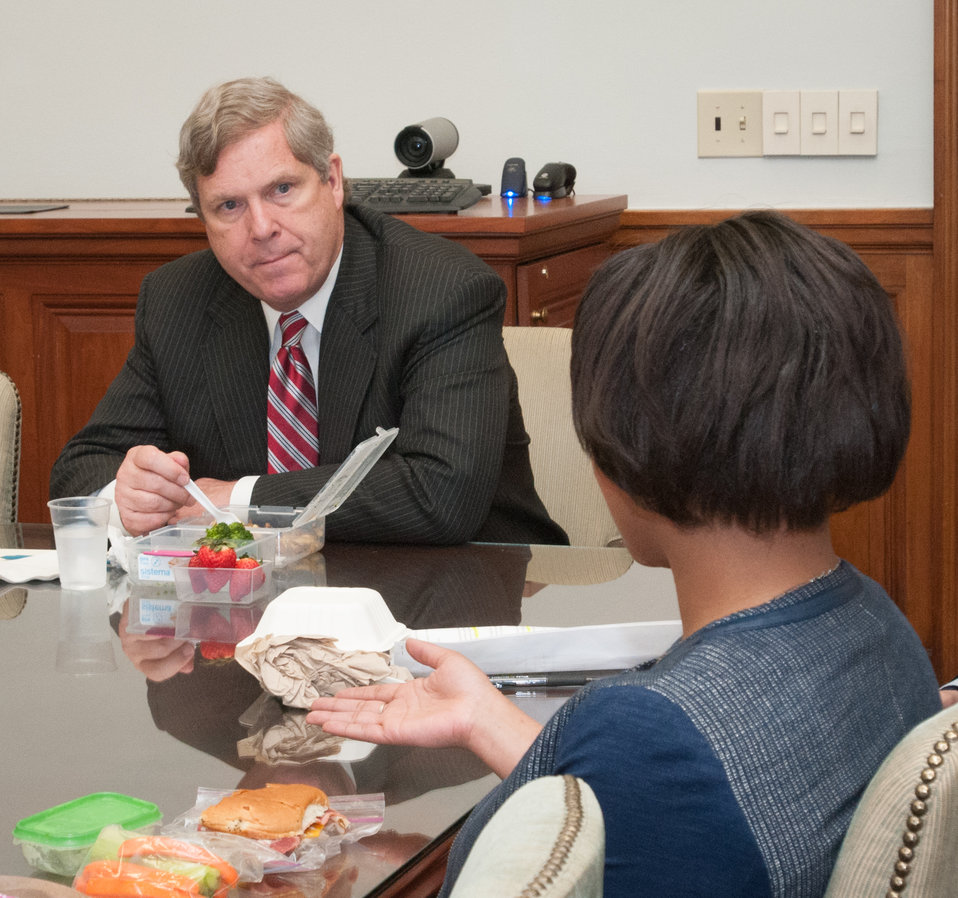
U.S. Department of Agriculture (USDA) Secretary Tom Vilsack, left, listens to Civil Rights Adjudicator Cinnamon Butler, right, talk about her role in the department, during a Brown Bag Lunch that Secretary Vilsack periodically has with employees, in his conference room, on Tuesday, April 9, 2013, in Washington, D.C.